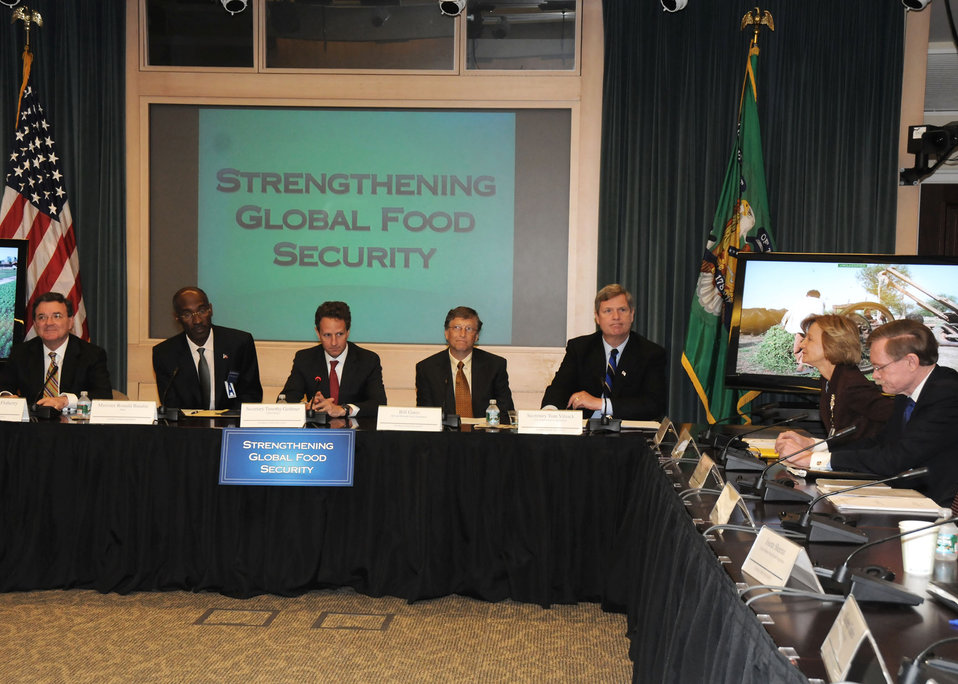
Agriculture Secretary Tom Vilsack joined Treasury Secretary Tim Geithner, Co-chair of the Bill and Melinda Gates Foundation Bill Gates, and other key finance ministers to announce an international commitment to fight global hunger and poverty. This conference was held at the Treasury Department in Washington, D. C., on Thursday, April 22, 2010. (L to R Canadian Minister of Finance James Flaherty, Haitian Minister of Finance Ronald Baudin, Treasury Secretary Tim Geithner, Co-chair of the Bill and Melinda Gates Foundation Bill Gates, Agriculture Secretary Tom Vilsack, Spanish Second Vice President and Minister of Finance Elena Salgado, and World Bank President Robert Zoellick. USDA photo 10di1325-24